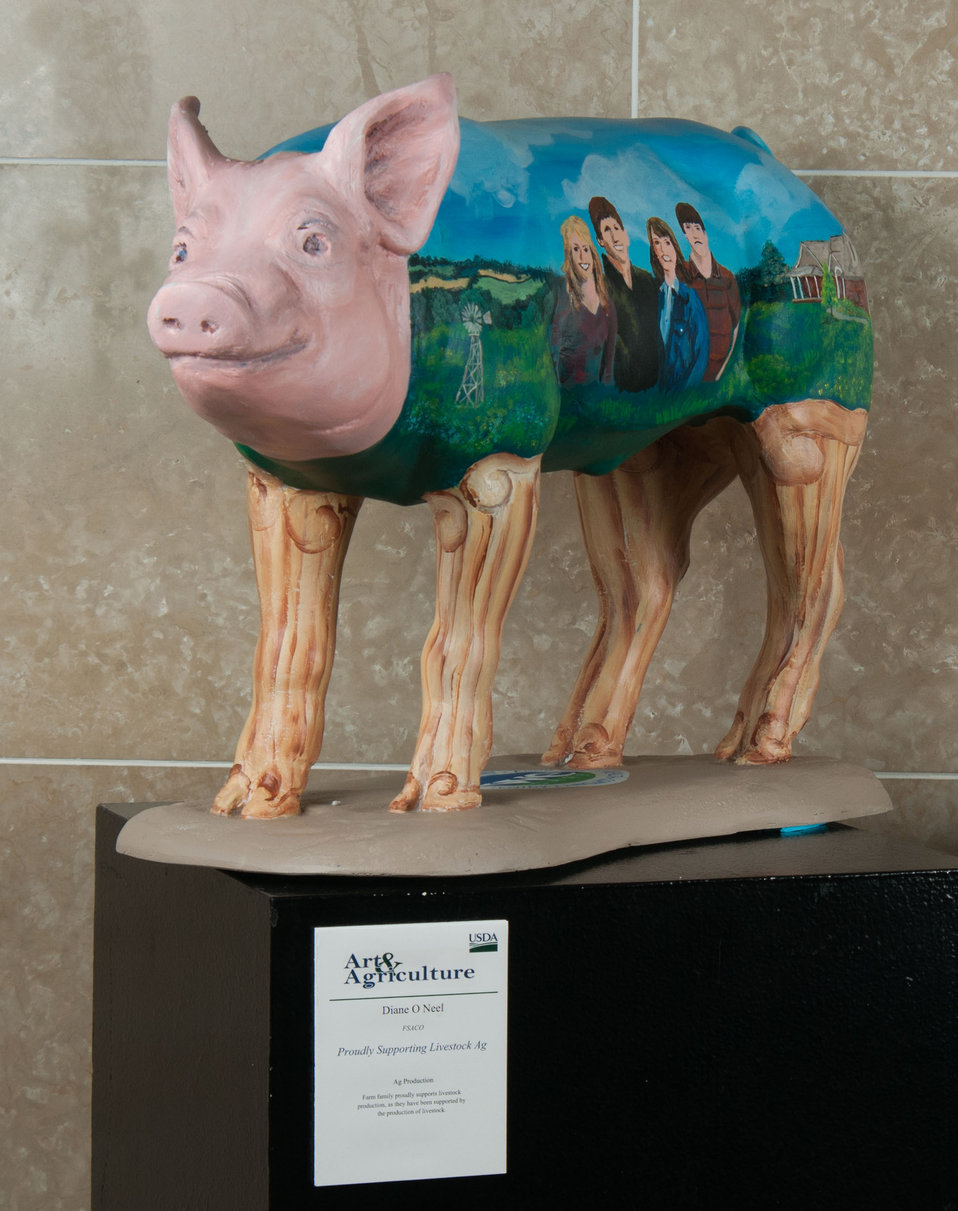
Online Viewer's Choice entries of the 2013 Art & Agriculture, Tuesday, July 9, 2013, in the South Building, Washington, D.C. Themes were expressed by employees from across the department and the contest was open to full-time and part-time USDA employees. Winning artwork will be displayed till the end of the year. U.S. Artistic expression is a creative outlet that is vital for an individual to grow and develop.